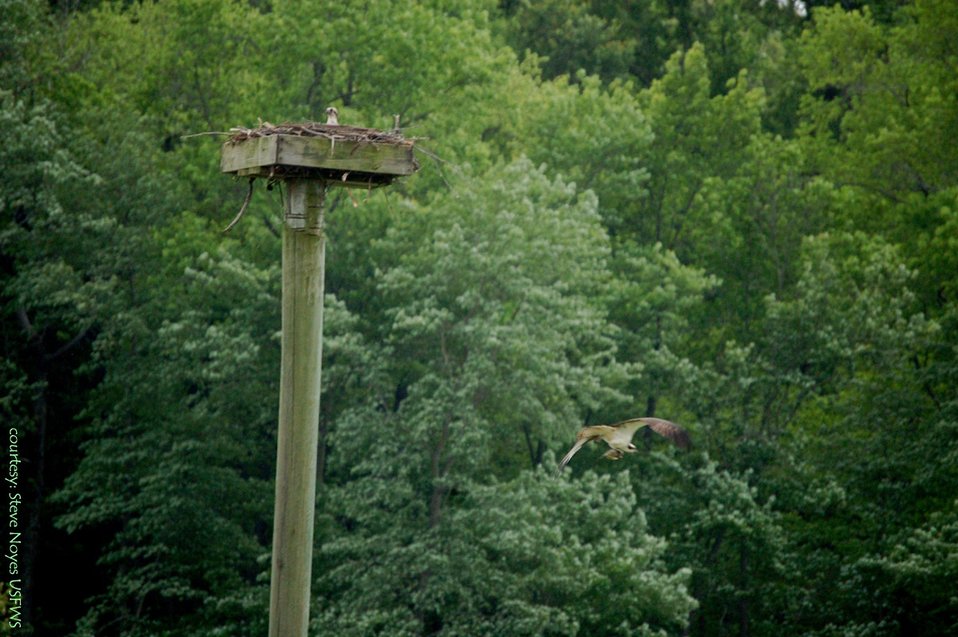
ospreys & the science that helped save them

Patuxent Research Refuge, MD
Photo: courtesy of Steve Noyes, USFWS
Patuxent Research Refuge is the world's first refuge for wildlife research, created by Pres. Franklin Delano Roosevelt in 1936. It is the site of landmark work in many fields, including captive breeding techniques for endangered species and studies that revealed the lethal effects of certain pesticides on wildlife. The result: a ban on the pesticide DDT and a remarkable comeback for eagles, pelicans, ospreys and other birds.